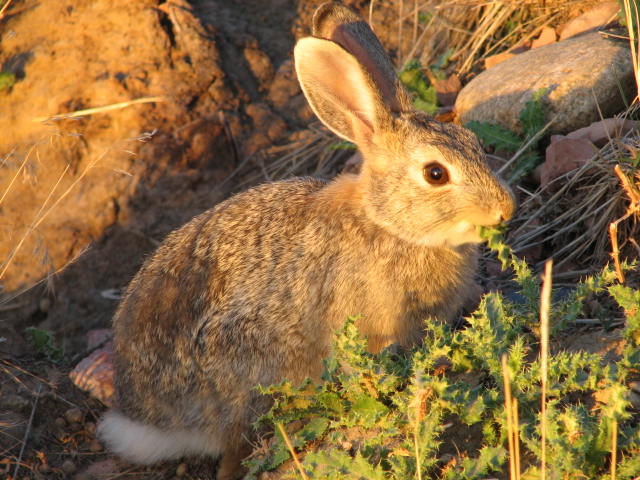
Desert Cottontail, Converse County, WY.

Credit: Pedro 'Pete' Ramirez, Jr. / USFWS